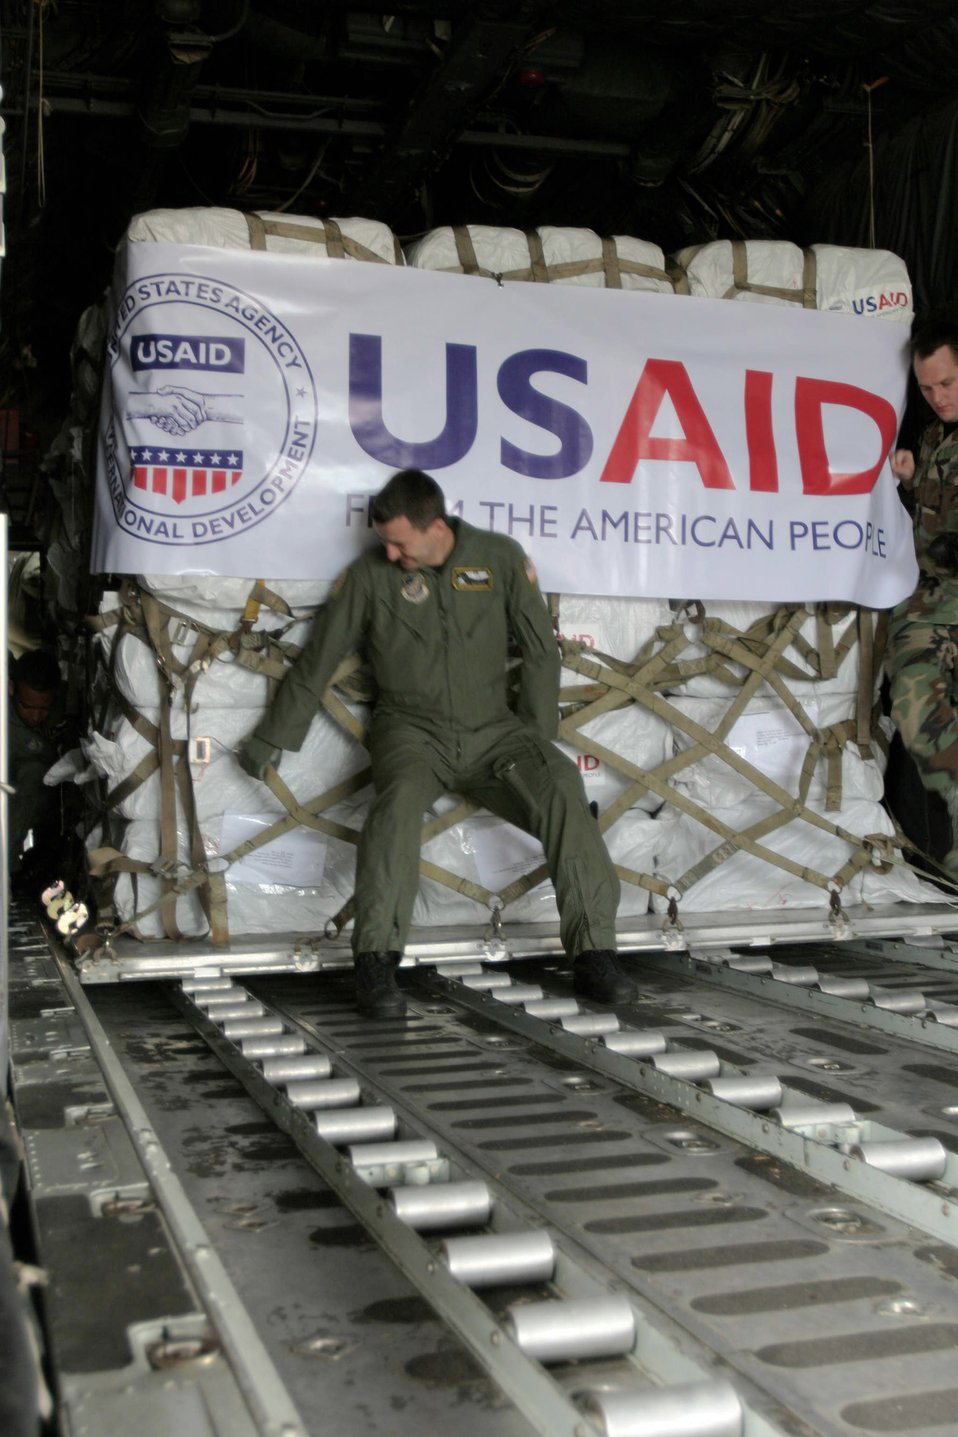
Airmen support Burma relief effort

Senior Airman Daniel Mortensen secures a pallet of supplies in a C-130 Hercules May 12 at Utapao Air Base, Thailand. The aircraft flew to Burma as part of Joint Task Force Caring Response, the joint humanitarian assistance and disaster relief response to Tropical Cyclone Nagris. Airman Mortensen is a a loadmaster with the 36th Airlift Squadron from Yokota Air Base, Japan.